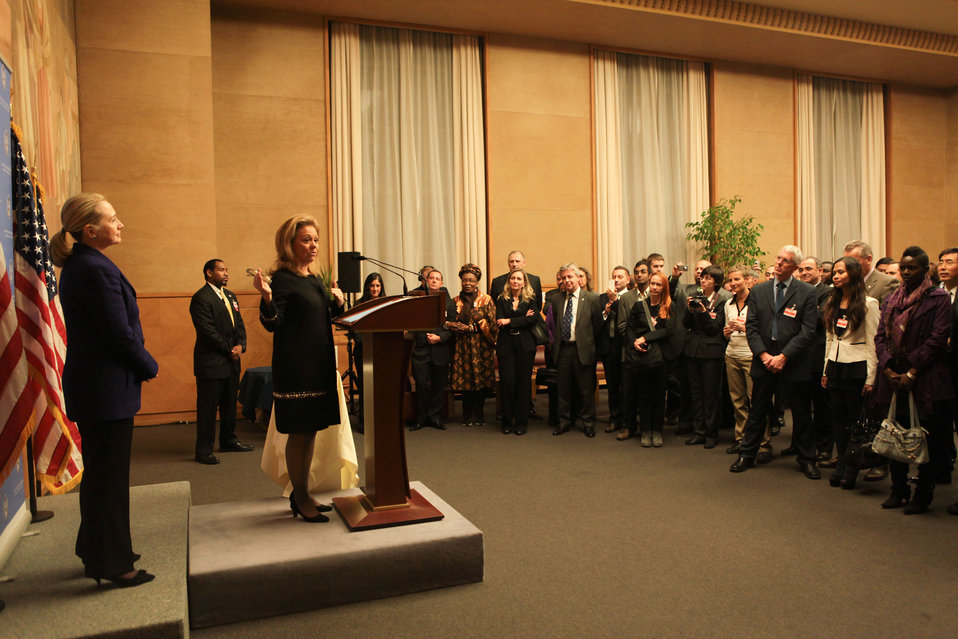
Ambassador Donahoe Introduces Secretary Clinton

U.S. Ambassador to the Human Rights Council Eileen Chamberlain Donahoe introduces U.S. Secretary of State Hillary Rodham Clinton to LGBT activists and supporters from the diplomatic corps at the United Nations Office at Geneva in Switzerland on December 6, 2011.